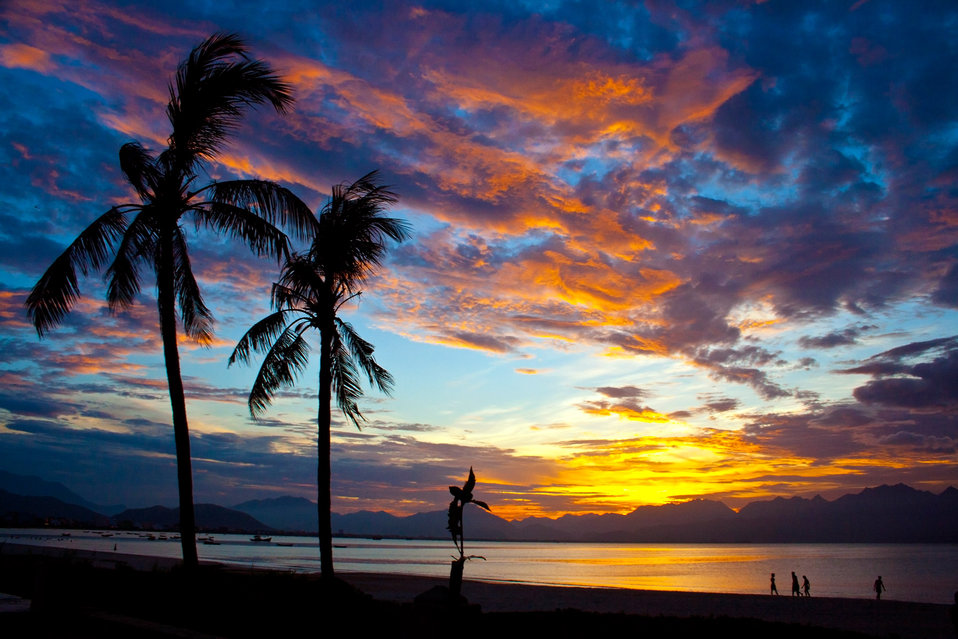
Sunset #3

Sunset on the bay of danang, central vietnam..